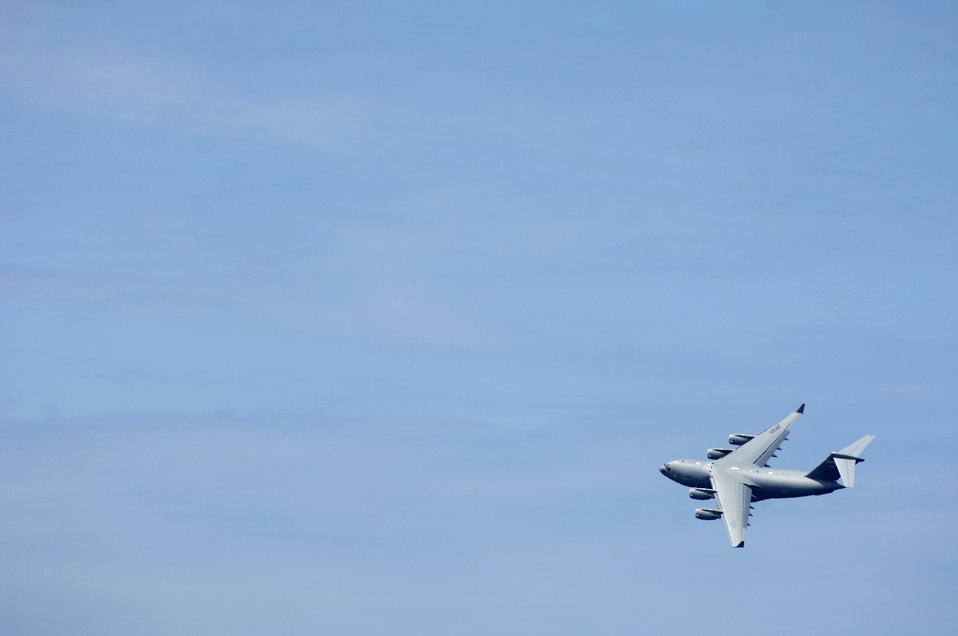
Air show to showcase C-17's capabilities

A C-17 Globemaster III practices aerial maneuvers Sept. 27 over Kona International Airport in Hawaii to prepare for an upcoming air show. The C-17 is from the 535th Airlift Squadron based at Hickam Air Force Base, Hawaii.